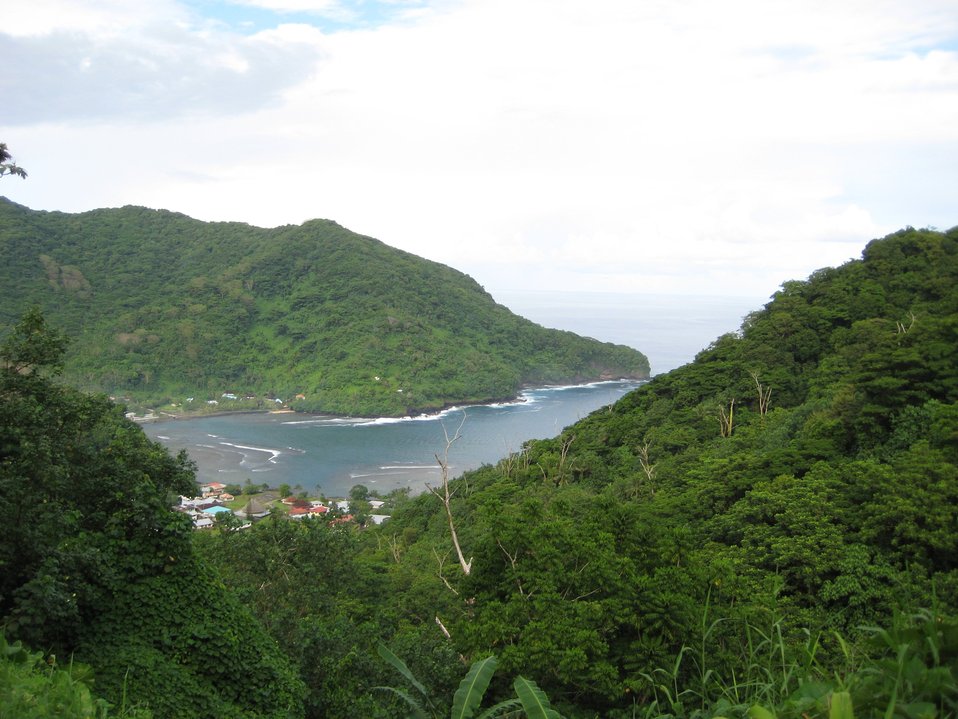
Village on bay